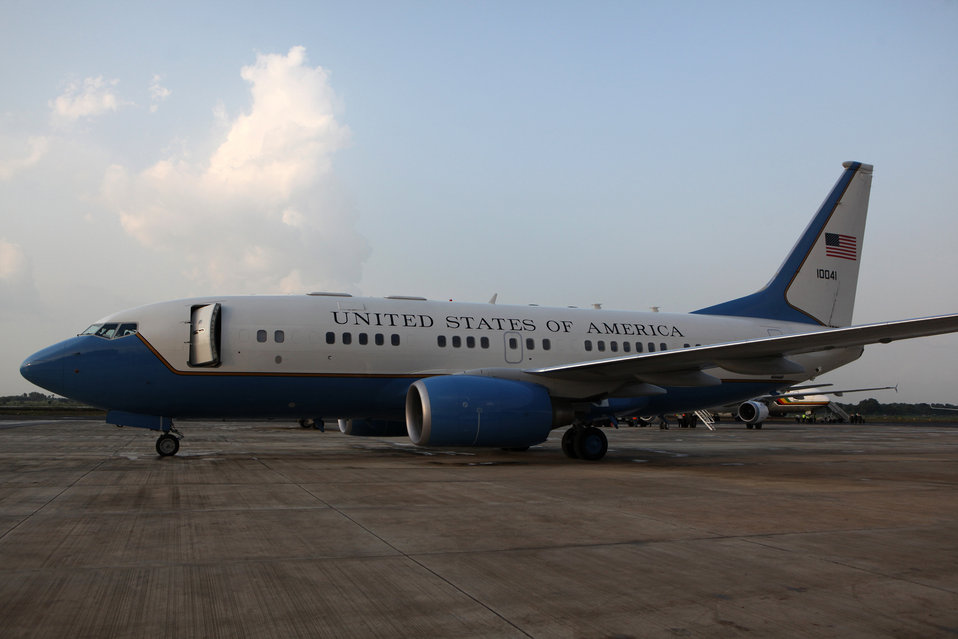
South Sudan Independence Day

U.S. President Barack Obama's Presidential Delegation prepares to leave the Juba International Airport, after attending the ceremony marking the declaration of independence of the Republic of South Sudan on July 9, 2011.